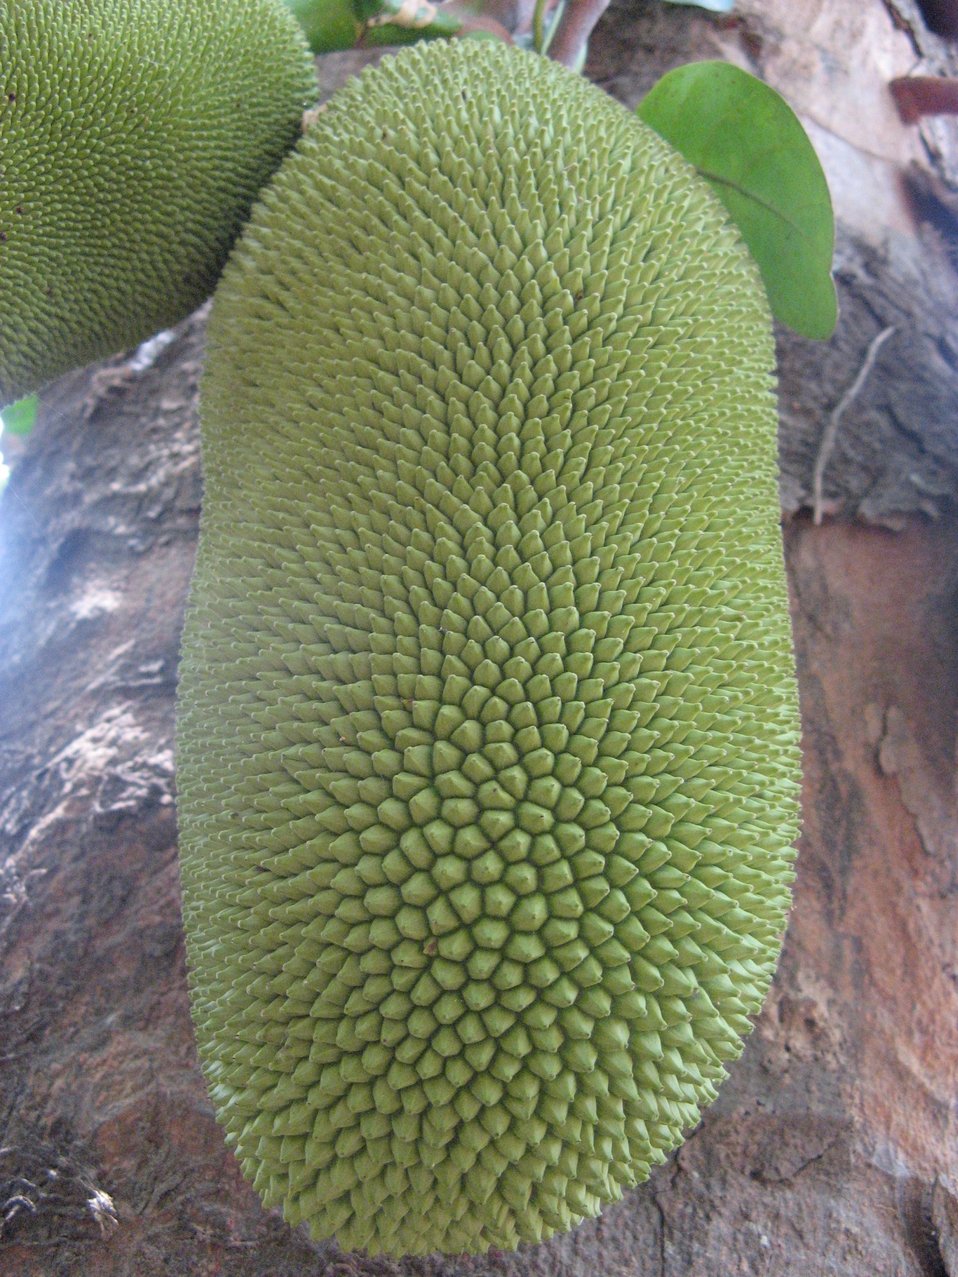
മലയാളം: ചക്ക